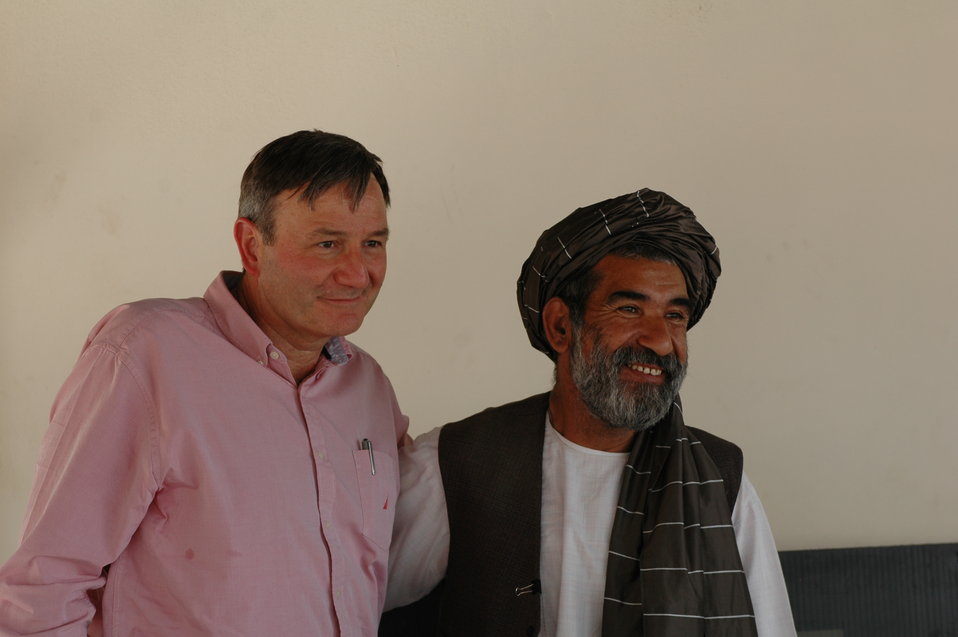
CODEL Berman